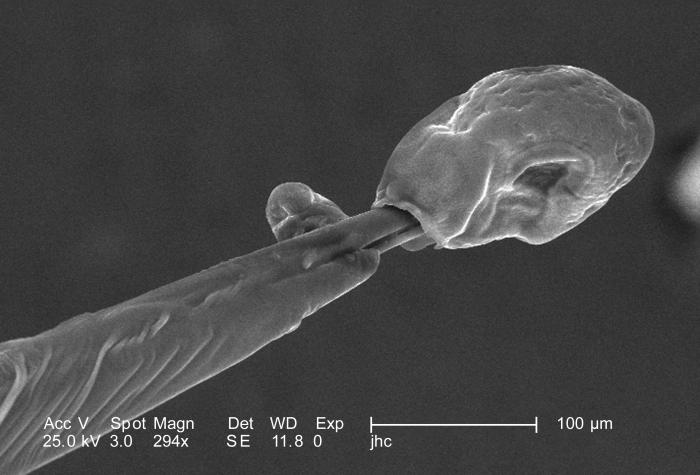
Under a moderate magnification of 294X, this scanning electron micrograph (SEM) focused on the distal tip of a female 'velvet ant's', Dasymutilla sp., stinger. Note that the stinger's tip is encased in a bulbous sheath, which may act to protect the delicate sharp tip from being damaged, which would reduce its effectiveness when trying to penetrate its victim. Take a look at PHIL 9882 and 9883 for even closer views of this structure. Also see PHIL 4638, 6363, and 6364 for photographs of the ant revealing its coloration, and velvety covering of external chitinous hairs.